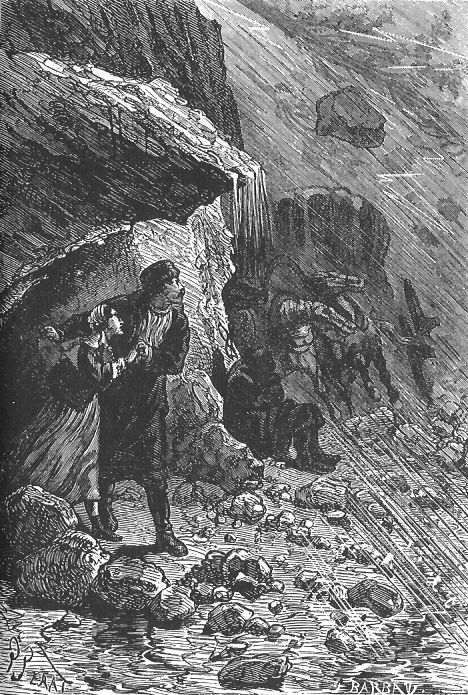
An illustration from the novel 'Michael Strogoff: The Courier of the Czar' by Jules Verne drawn by Jules Férat. Polski: Ilustracja powieści Juliusza Verne'a 'Michał Strogow, kurier carski' autorstwa Julesa Férata. Français : 'Michel Strogoff. Le courier du tzar', Jules Férat. Français : « Des cris, frère ! Écoute ! »